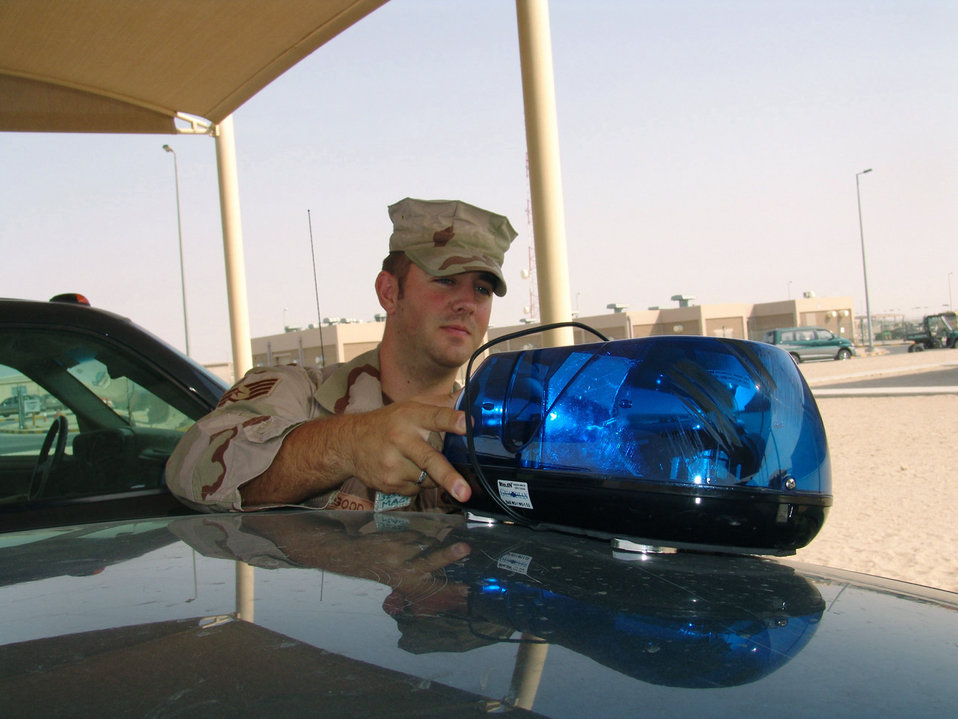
Blue-light special

SOUTHWEST ASIA -- Staff Sgt. Stephen Scattergood attaches a police light to the top of his vehicle before going on patrol at a deployed location here. He is assigned to the 891st Expeditionary Security Forces Squadron. The squadron is responsible for law enforcement and security patrols throughout the area.